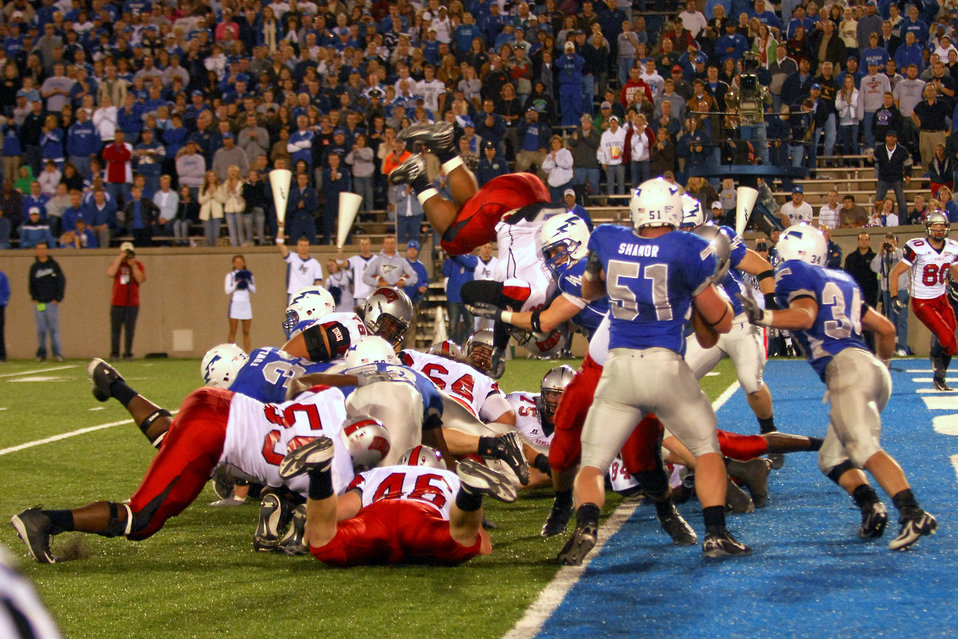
Falcons back on winning track, 31-14

UNLV running back Frank Summers is stopped at the goal line by Air Force linebacker John Rabold during the Falcons 31-14 victory over the Rebels Oct. 6 at Falcon Stadium. Rabold posted a game- and career-high 12 tackles.